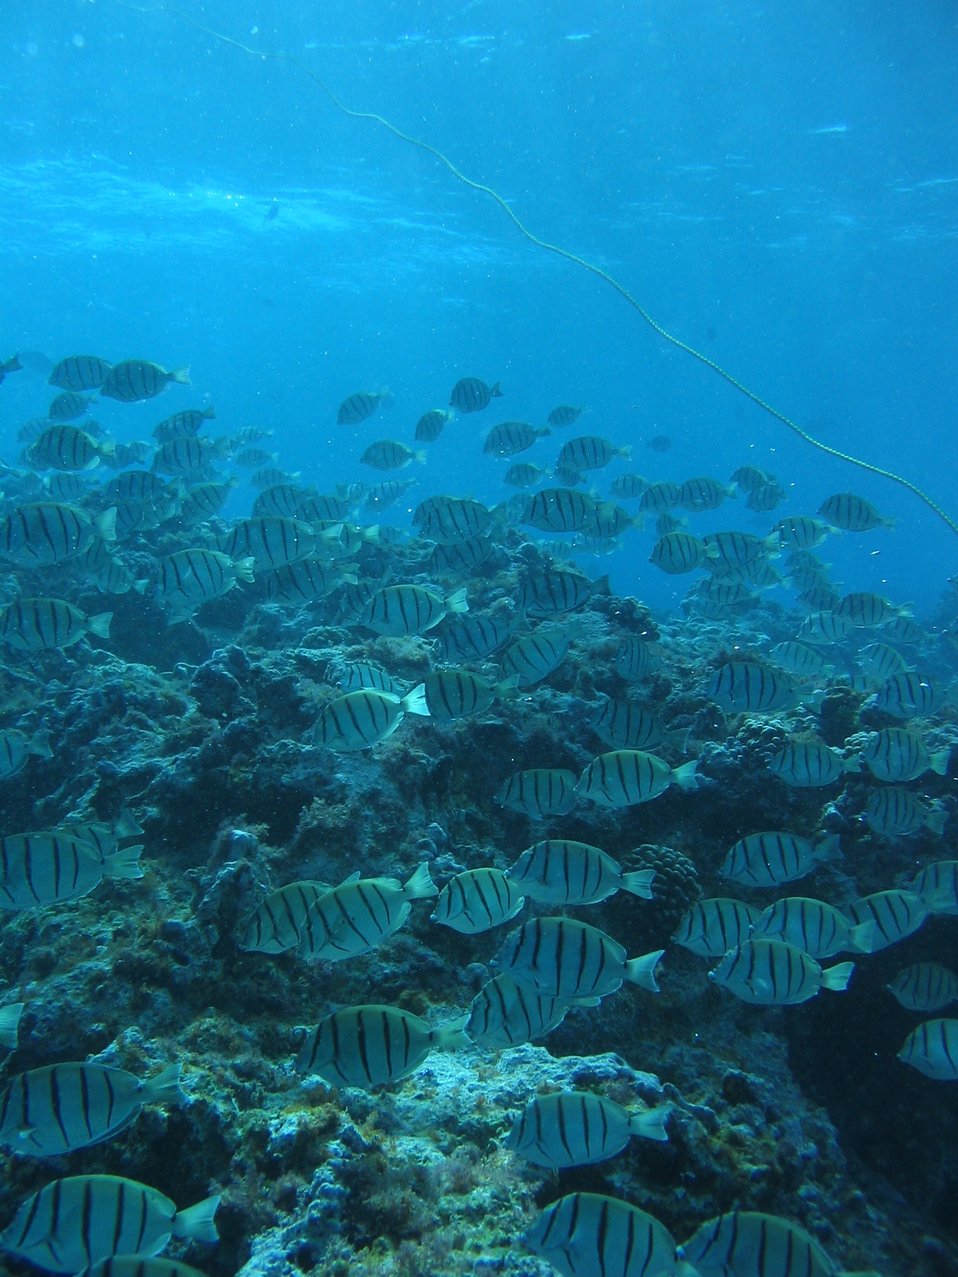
A school of convict tangs (Acanthurus triostegus). Hawaiian name is manini.